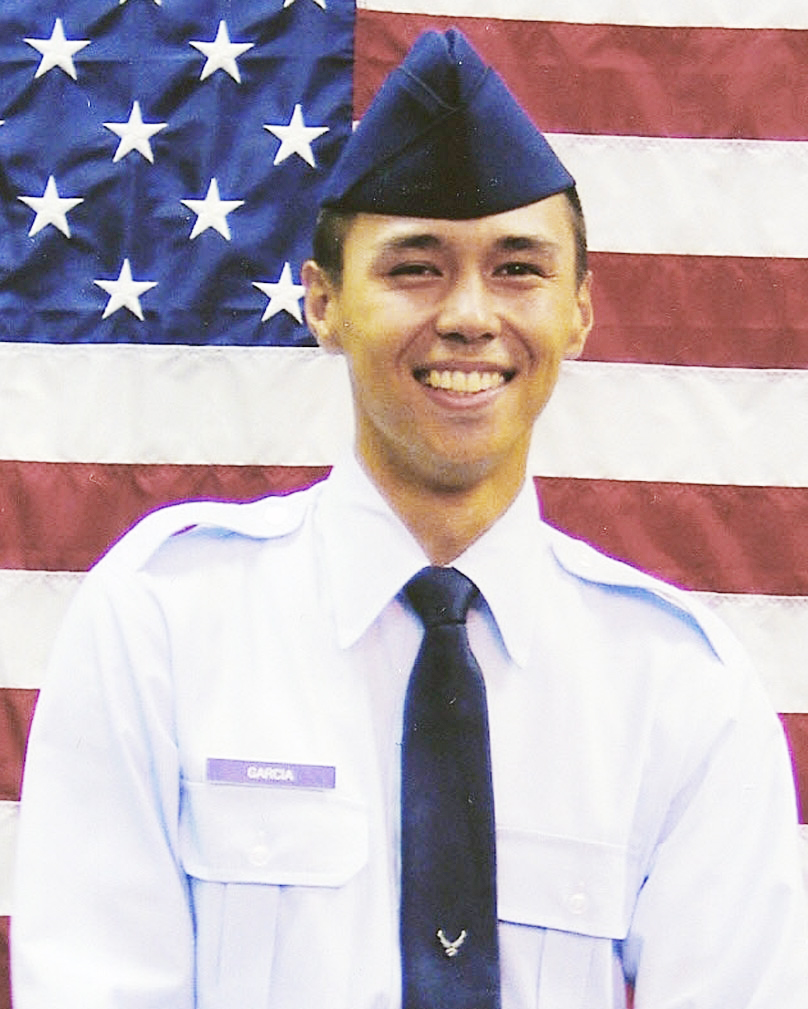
Offutt Airman dies at off-base residence

Senior Airman Michael Garcia died at his off-base residence Dec. 11 as the result of an apparent gunshot wound. Airman Garcia was a member of the 55th Operations Support Squadron at Offutt Air Force Base, Neb.